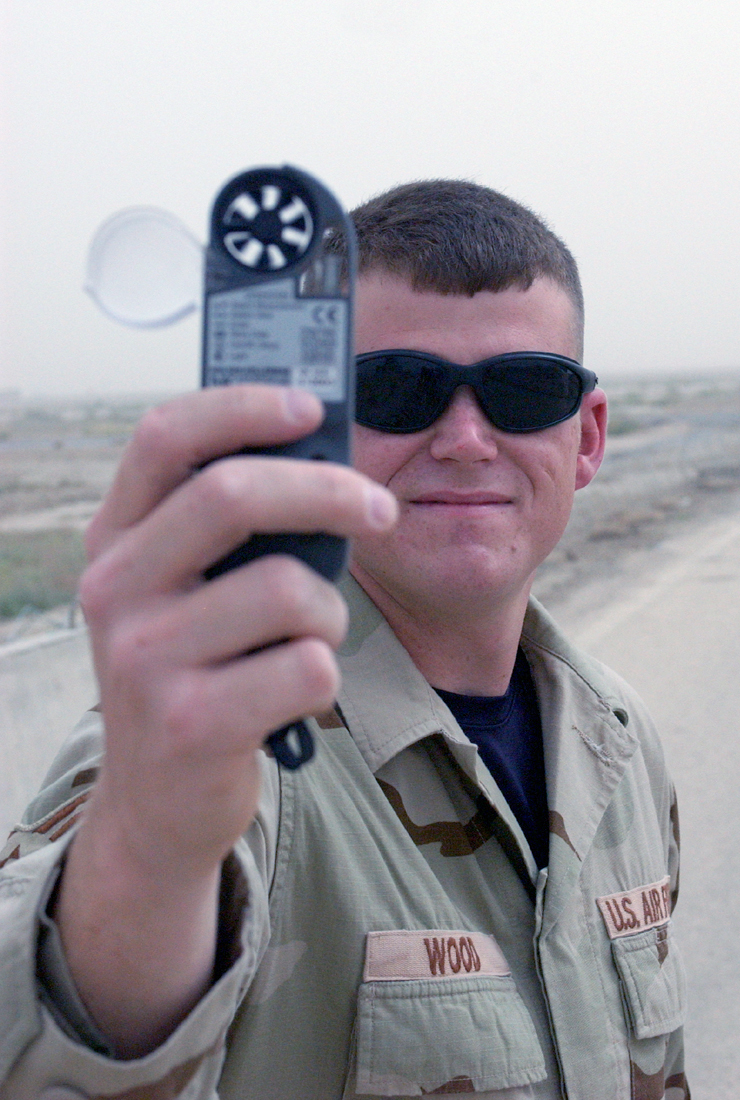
Weather-savvy Airmen assist with operational success

Staff Sgt. Aaron Wood checks wind speed and direction with a portable monitor at Ali Base, Iraq, on Tuesday, May 30, 2006. Forecasters need to know the wind speeds and directions to give pilots accurate information on arrivals and departures. Sergeant Wood is with the 407th Expeditionary Operations Support Squadron and is deployed from Eglin Air Force Base, Fla.